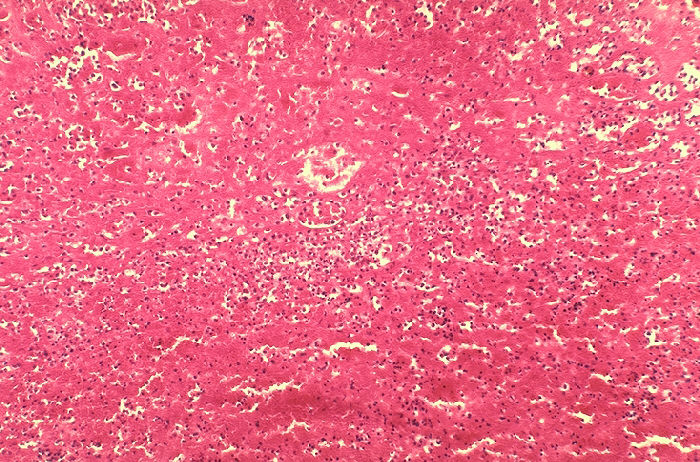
Histopathology of mediastinal lymph node in fatal human anthrax.